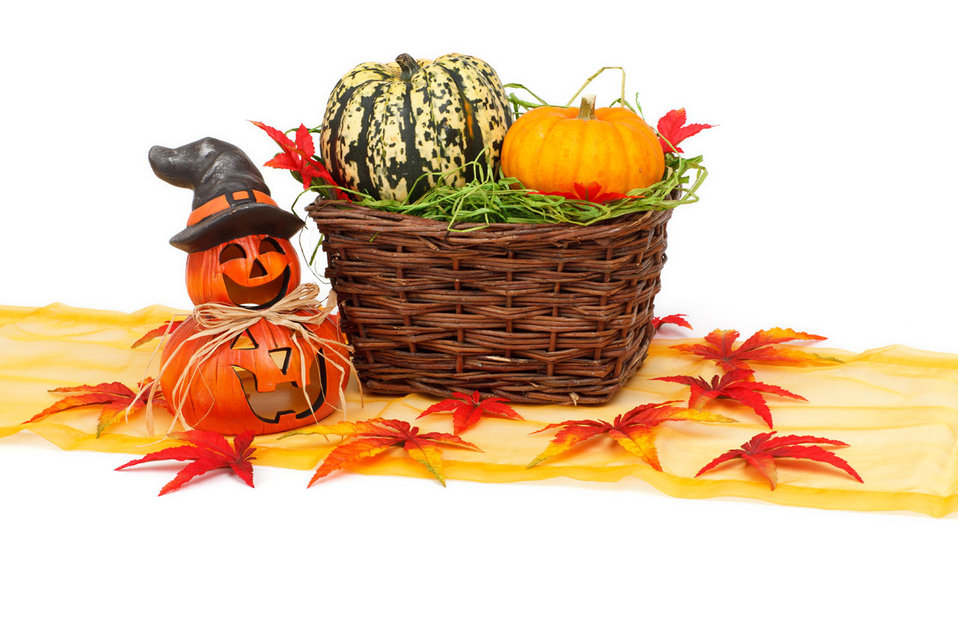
Happy halloween

Halloween still life autumn decoration with pumpkins on white background.